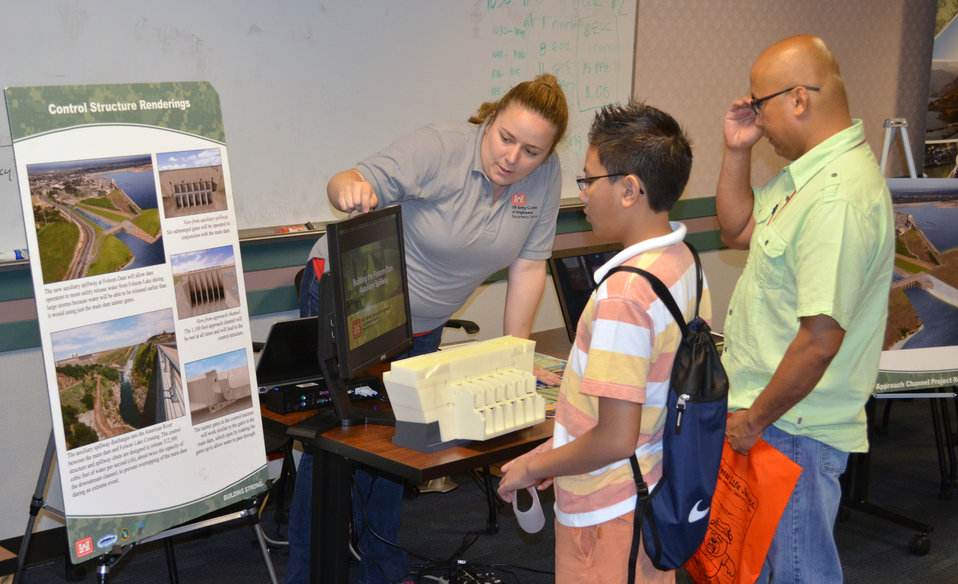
“Bring Your Child to Work Day” promotes science and technology jobs

Colby Conrad, a project management specialist with the U.S. Army Corps of Engineers Sacramento District, explains the Folsom Dam auxiliary spillway construction project during the “Bring Your Child to Work Day” event Aug. 8, 2013 at district headquarters in Sacramento, Calif. The district hosted the event to encourage kids to pursue careers in science, technology, engineering and mathematics, or STEM.